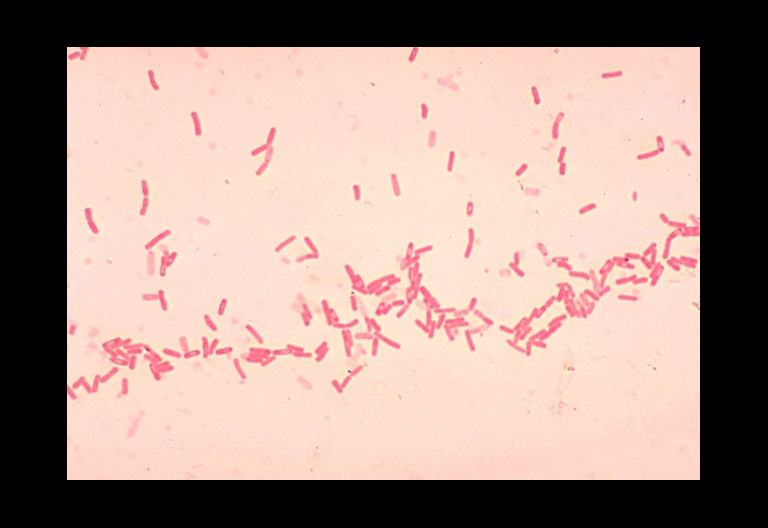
Bacillus coagulans showing spores. Gram stain.